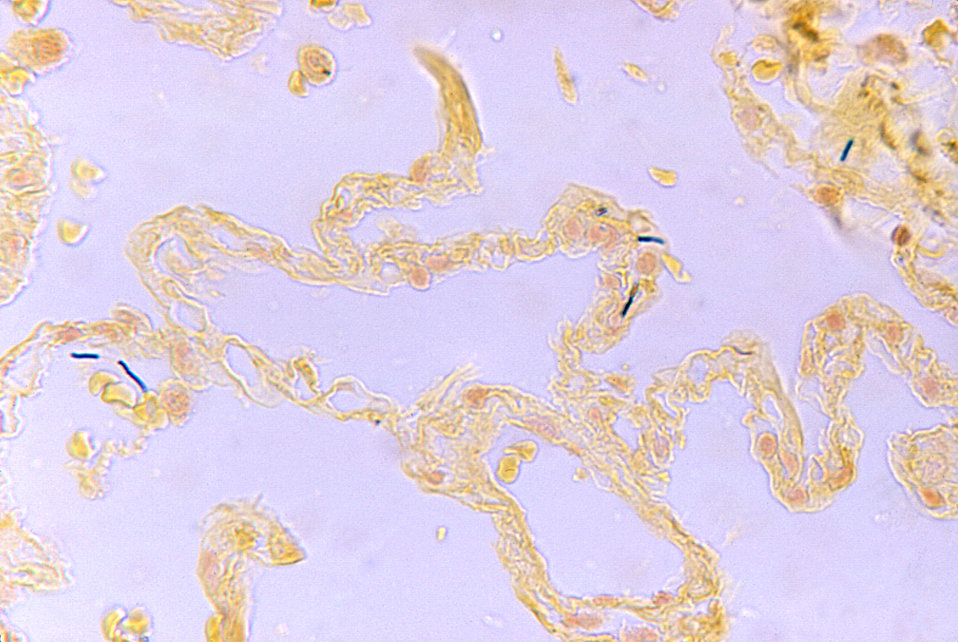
Bacillus anthracis in lung.